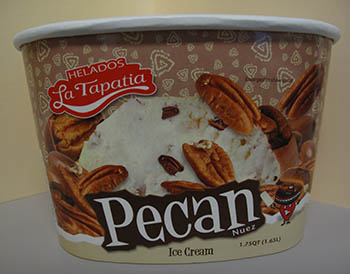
RECALLED – Ice cream products

March 19, 2014 – Product Recall – Helados La Tapatia, Inc. Recalls Products Because of Possible Health Risk.